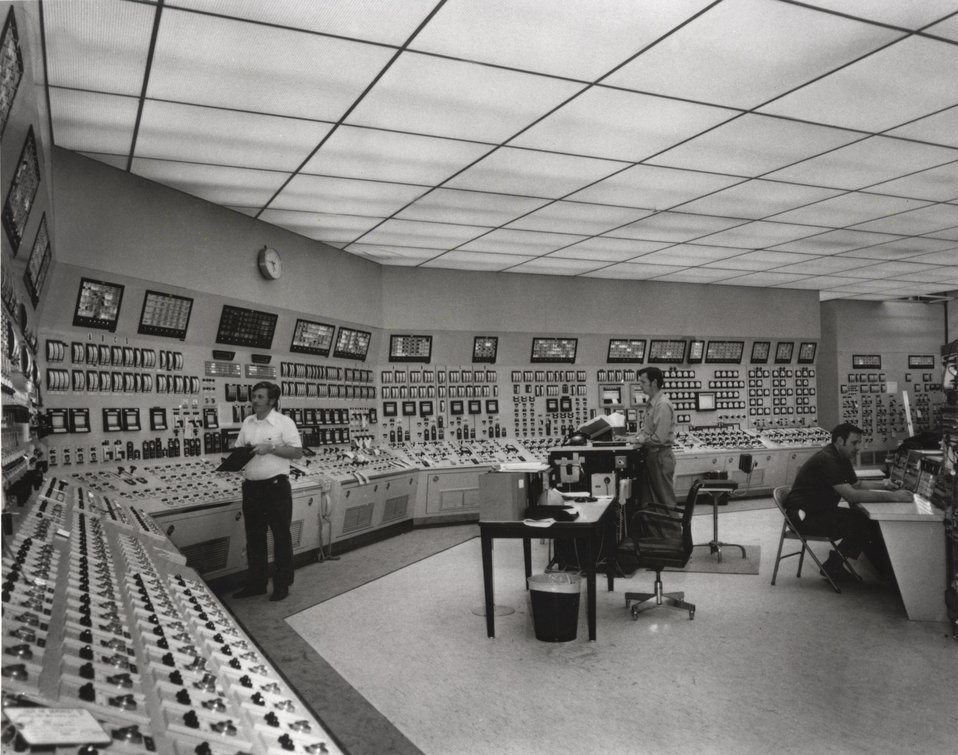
From this control room at Commonwealth Edison Company's Zion nuclear power station, every phase of the operations of the plant's two 1,100,000-kilowatt generating units is observed around the clock. Circa 1974.